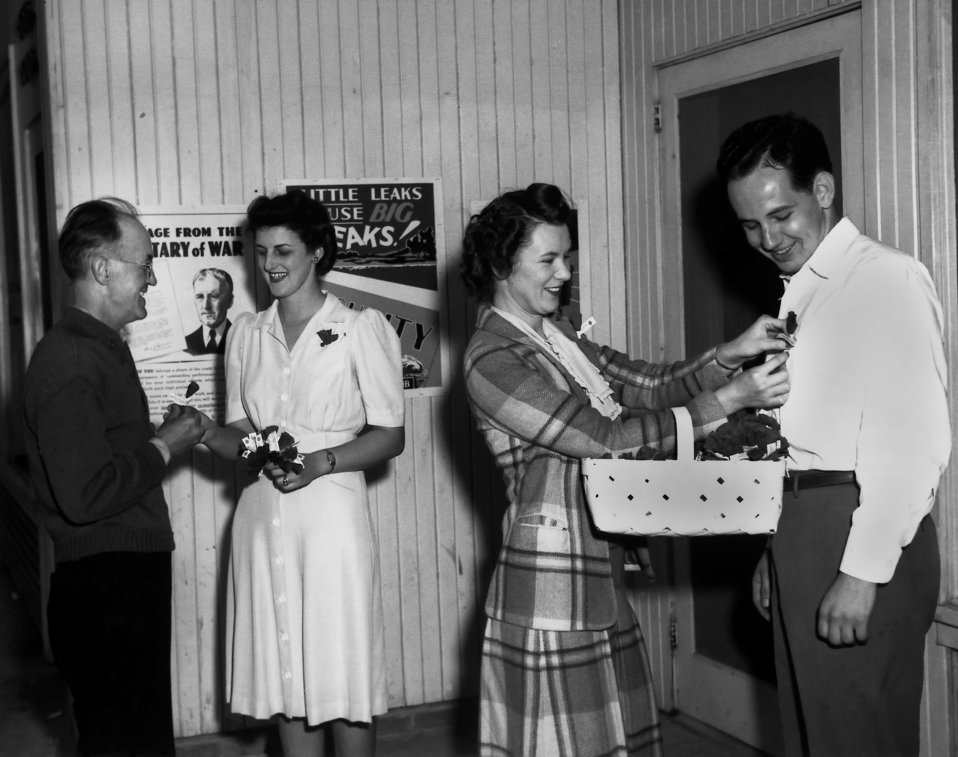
Poppy Sale Oak Ridge

Pro 580 DOE photo Ed Westcott 5/17/45
Oak Ridge Tennessee